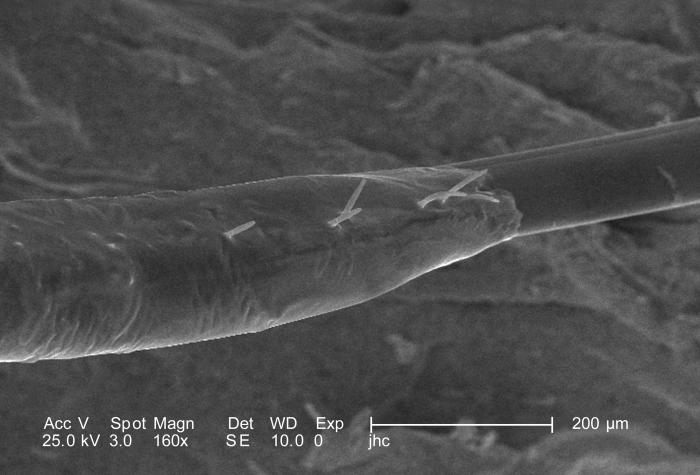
Under a moderate magnification of 160X, this scanning electron micrograph (SEM) focused on the proximal base of a female 'velvet ant's', Dasymutilla sp., stinger. Note that the base of the stinger is encased in a sheath, with a few small sensorial hairs known as 'setae' emanating from the surface.